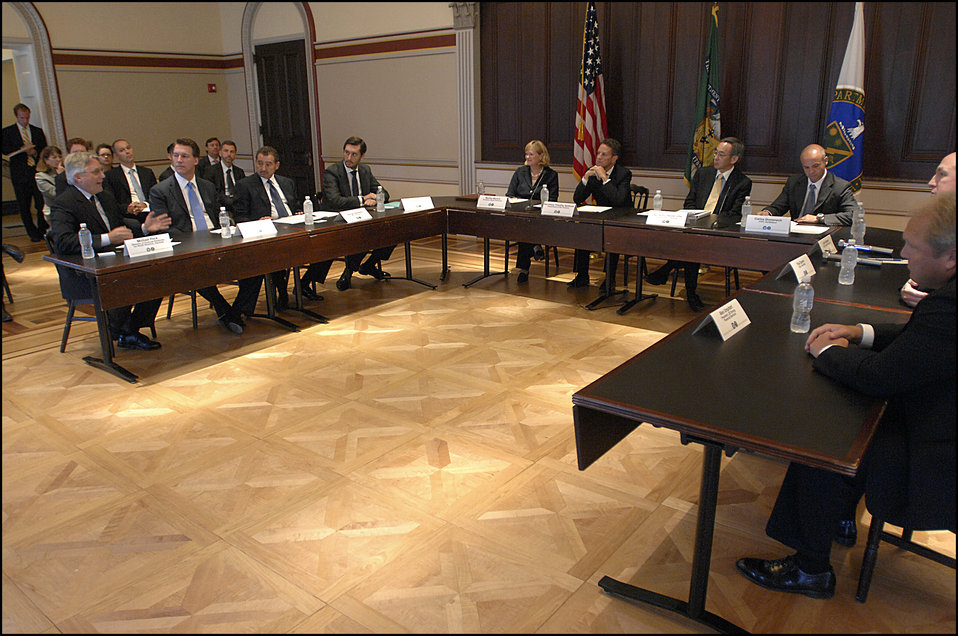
Roundtable016 1